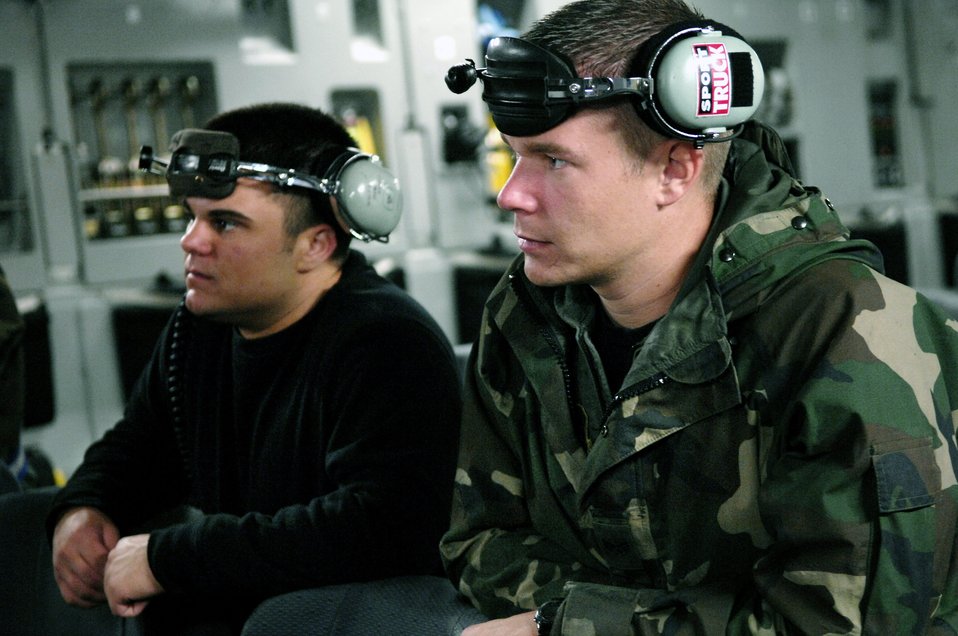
Off to the South Pole

Maintenance Airmen wait to launch a C-17 Globemaster III for a winter fly-in mission for Operation Deep Freeze Aug. 20 from Christchurch, New Zealand. A C-17 and 31 Airmen from McChord Air Force Base, Wash., are flying in an augmentation of scientists, support staff, food and equipment for the U.S. Antarctic Program at McMurdo Station.